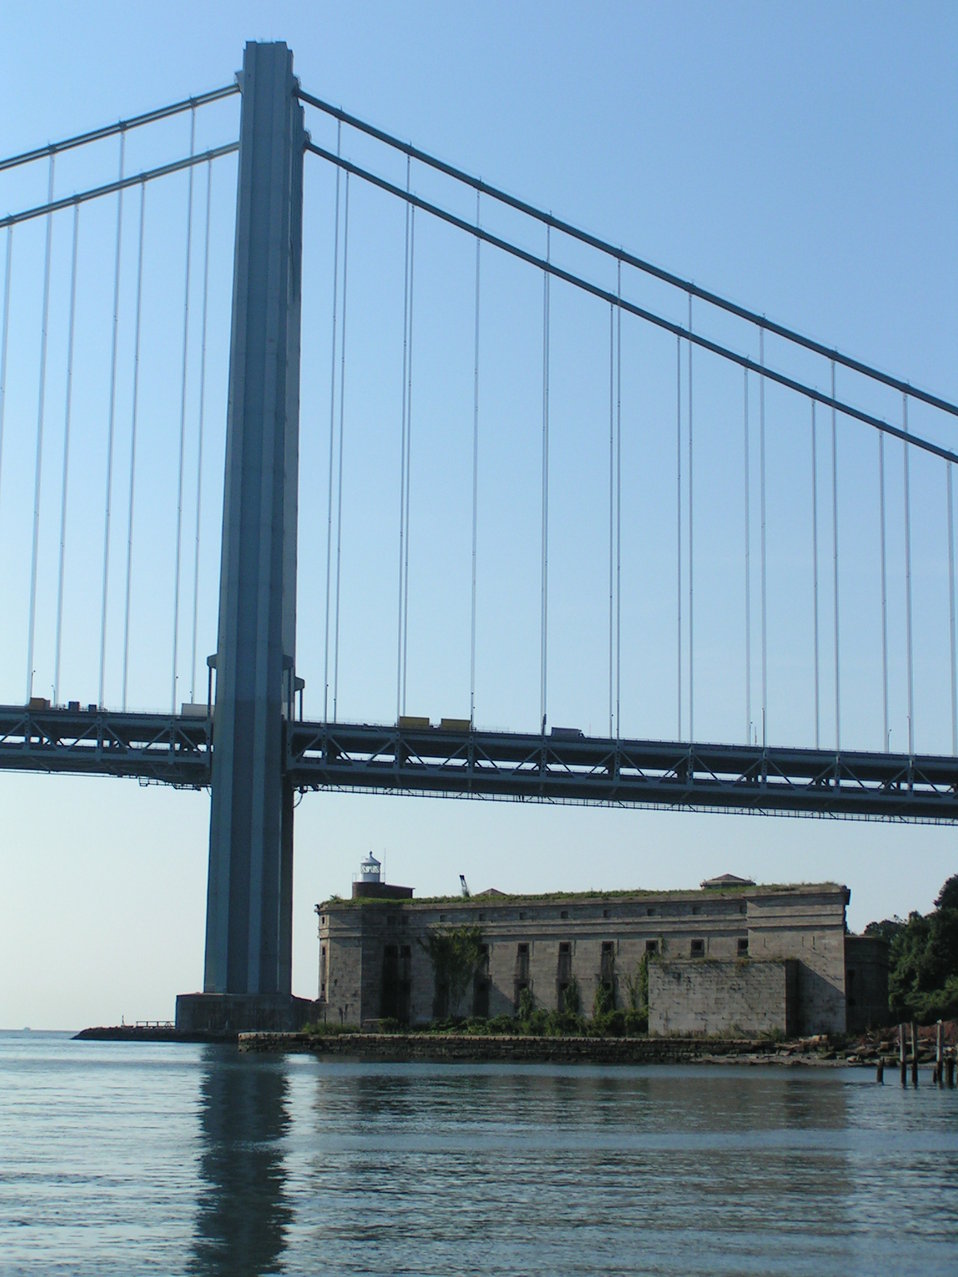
The west pier of the Verrazano-Narrows Bridge with Fort Wadsworth in the foreground.